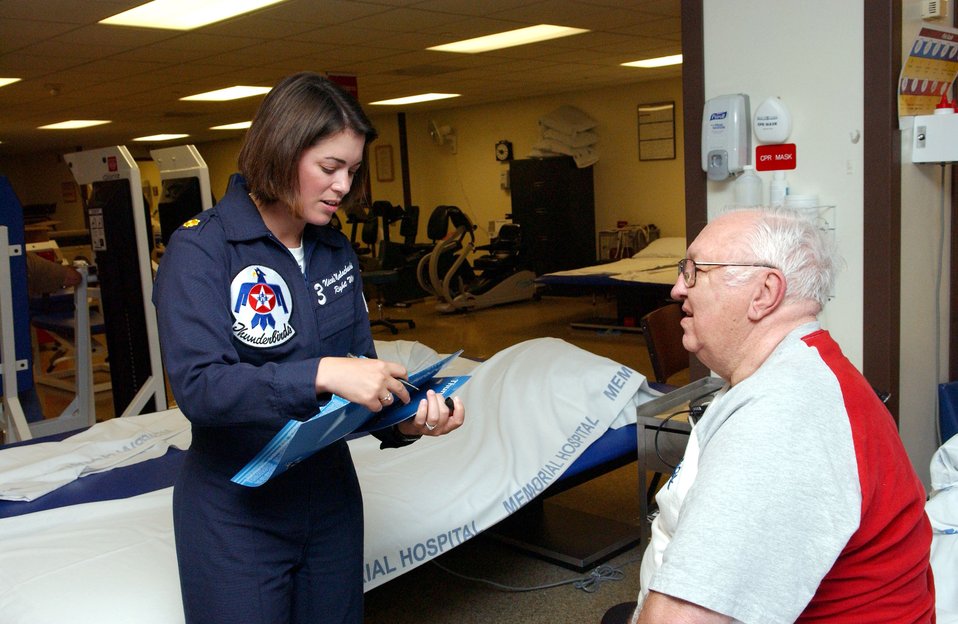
Major in first season with Thunderbirds

Maj. Nicole Malachowski autographs a Thunderbird brochure for Arch Montgomery, a patient at the Belleville Memorial Hospital Aug. 10 as part of Air Force Week activities in the greater St. Louis area. The Thunderbird pilot flies the No. 3 jet as the right wing in the diamond formation.